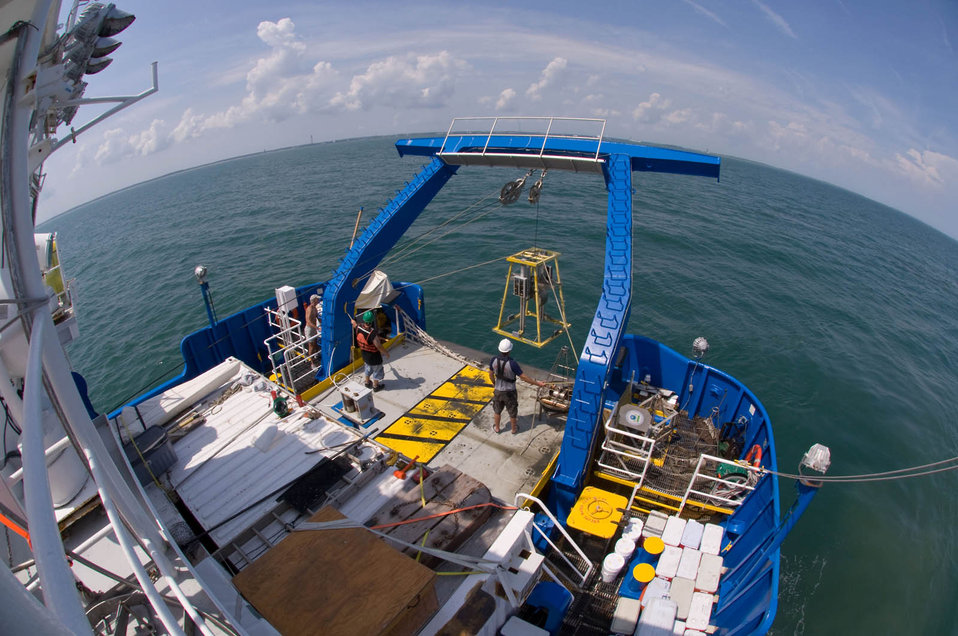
Virginia Coastal Survey

A large clamshell is being lowered off the aft deck of the Bold, to collect a sediment grab sample at the bottom.